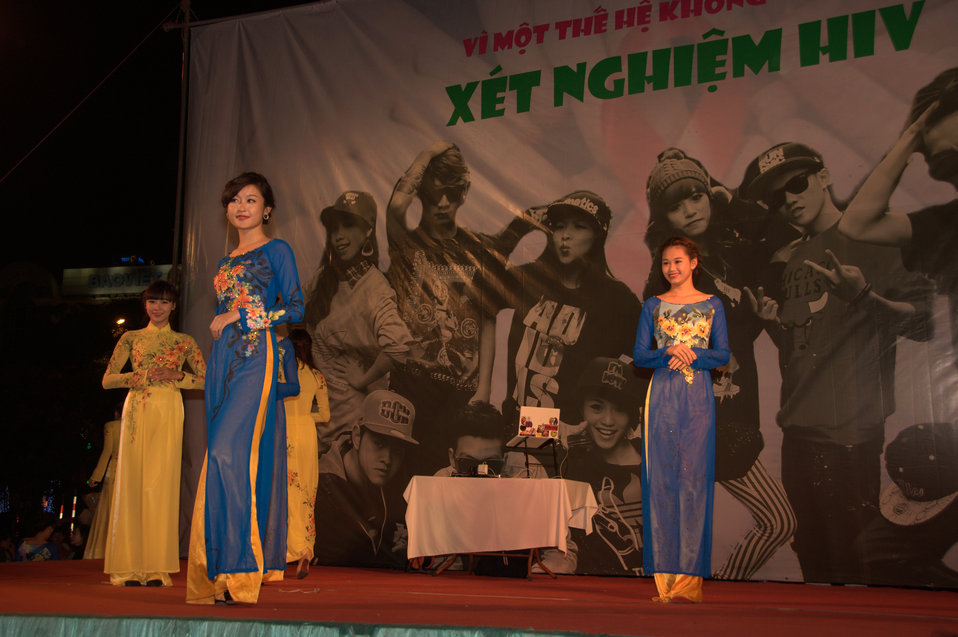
USAID and PEPFAR supports an outdoor concert to promote Vietnam's national action month for HIV

Hanoi, December 18, 2012.